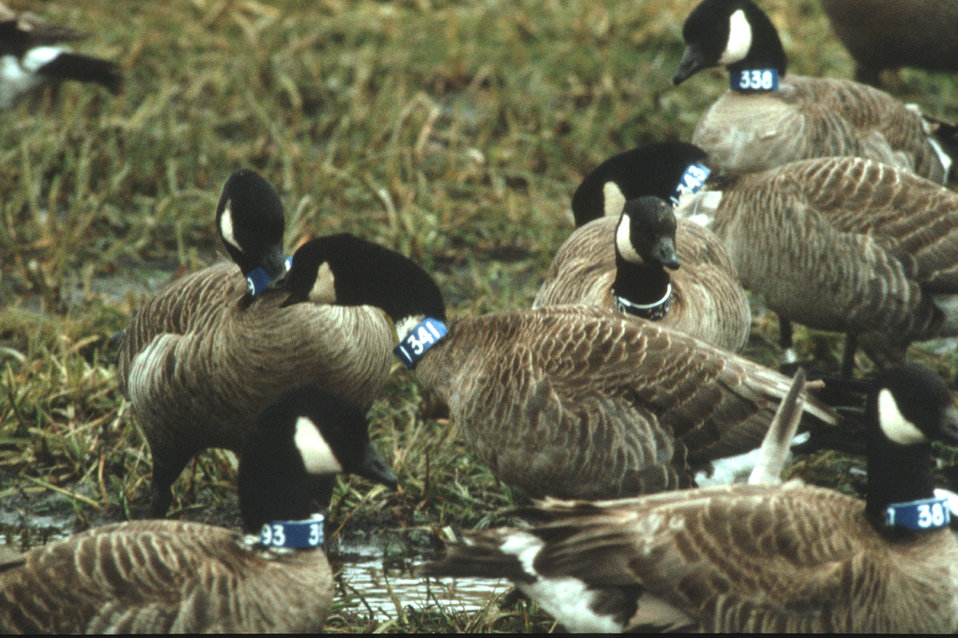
Canada geese with neck bands

Banded geese band together.